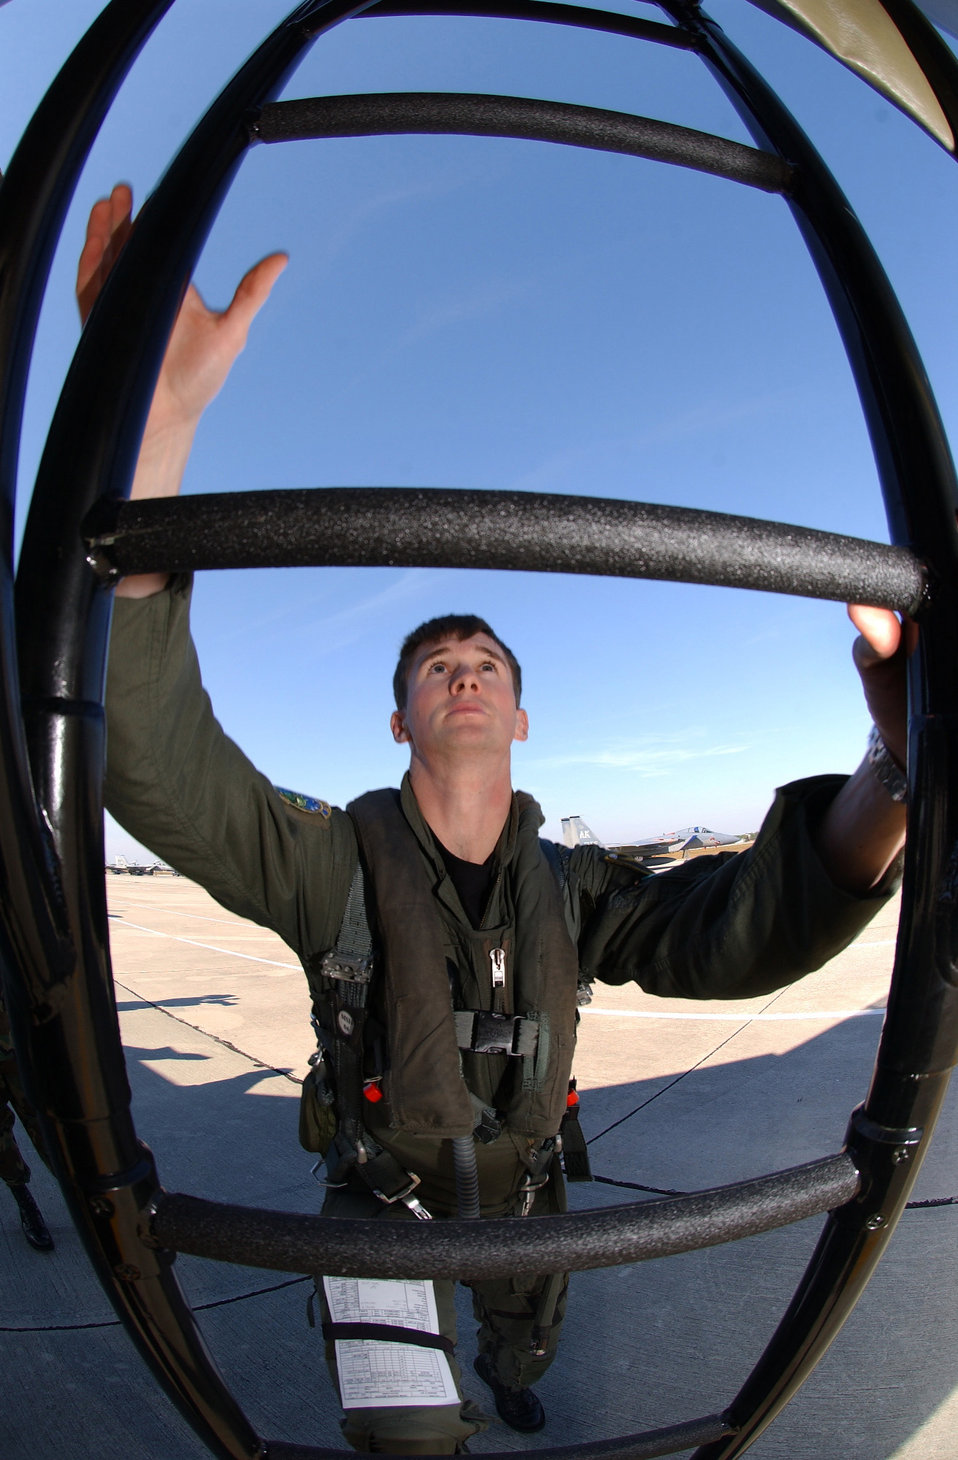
Up you go

TYNDALL AIR FORCE BASE, Fla. -- Capt. Matt French climbs the ladder to his F-15C Eagle before a competition during William Tell 2004 here recently. William Tell tests an aircrew's ability to perform in a combat environment. Captain French is assigned to the 493rd Fighter Squadron at Royal Air Force Lakenheath, England.